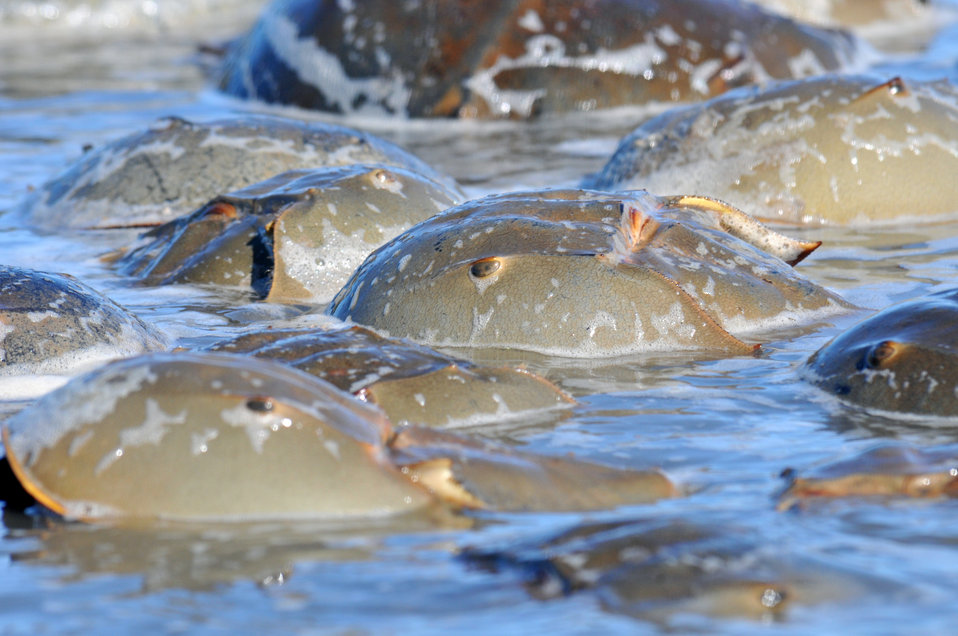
Horseshoe Crab

Mispillion Harbor, Delaware.